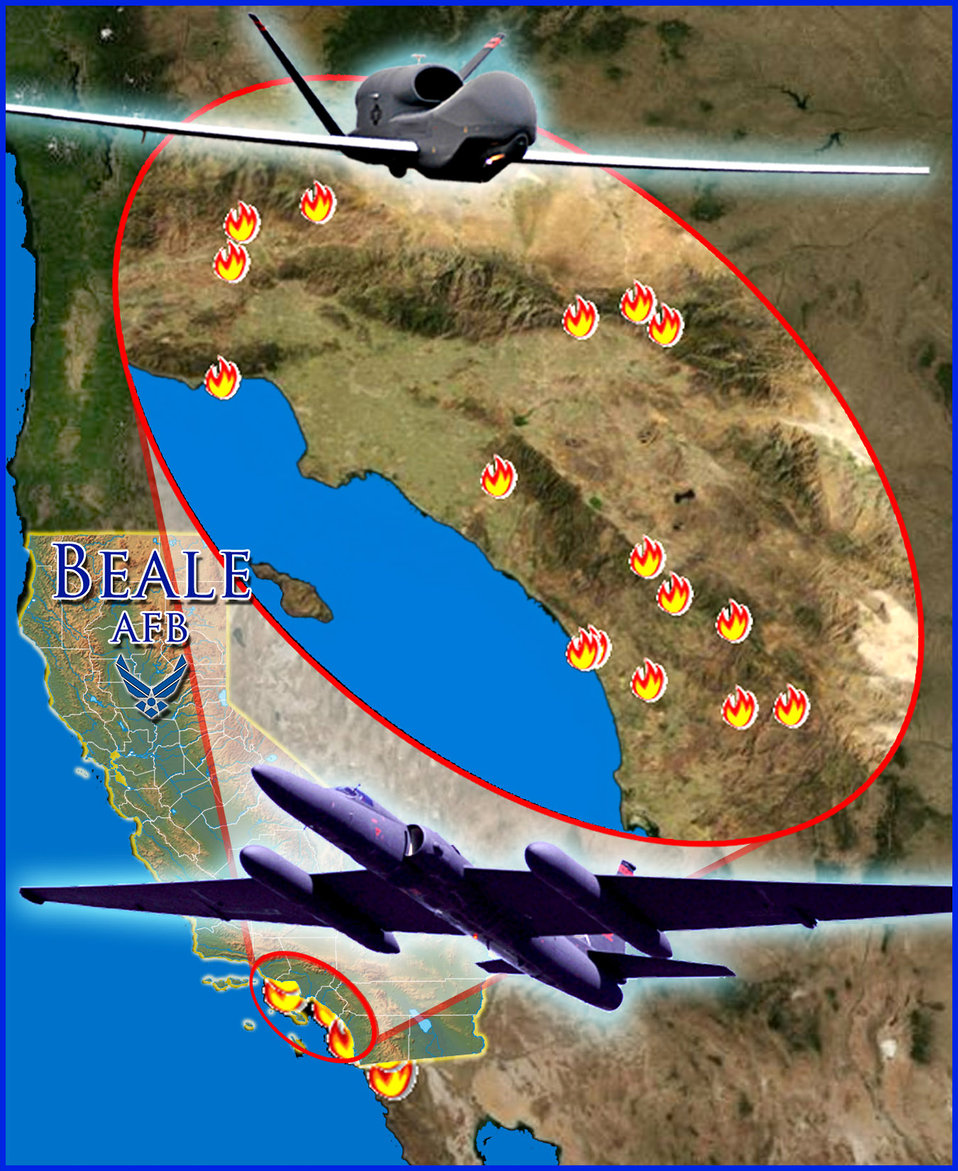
Beale Airmen, ISR assets support for California wildfires

The 9th Reconnaissance Wing's U-2 and Global Hawk surveillance and reconnaissance aircraft from Beale Air Force Base, Calif., have been tasked to collect high-altitude imagery of the wildfires in Southern California.